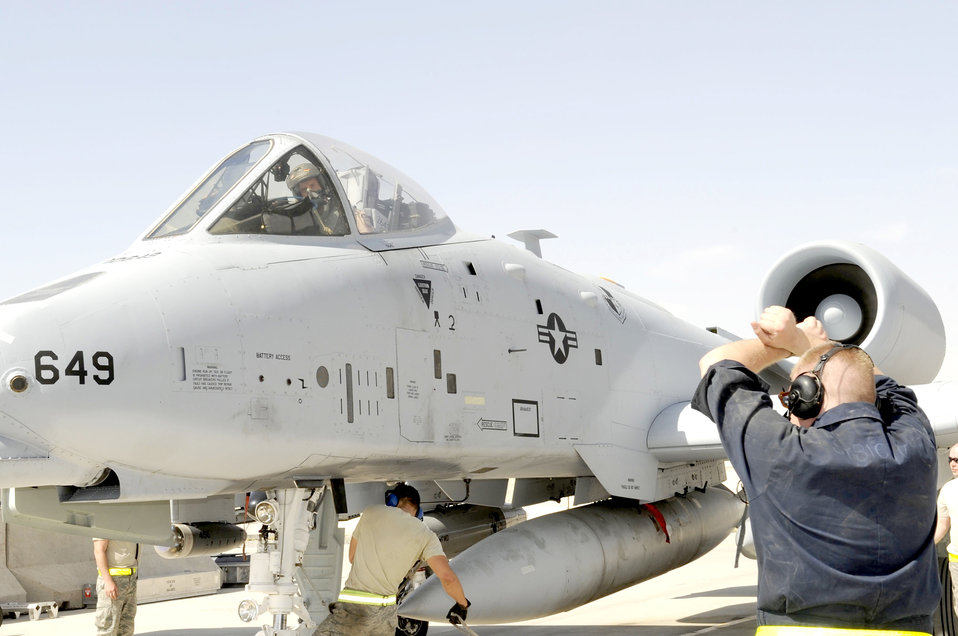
A-10 Thunderbolt II post-flight check

A crew chief gives a signal for the A-10 Thunderbolt II pilot to hold his position as the chocks are put in place May 11, 2010, at Kandahar Airfield, Afghanistan.